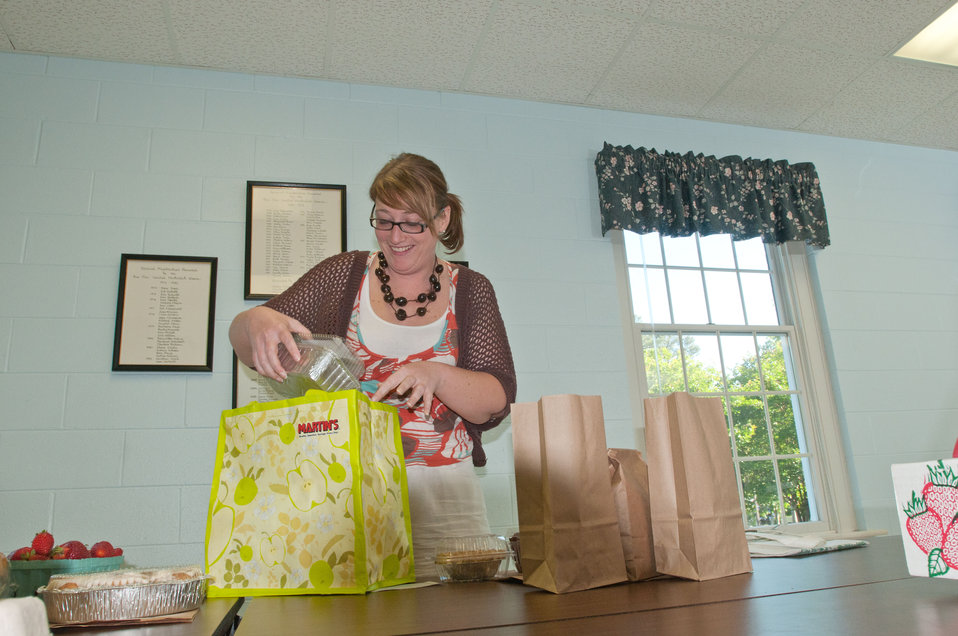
Susannah Bishop picks up her customized order of Fall Line Farms groceries at the Bon Air United Methodist Church pick-up point, in Richmond, VA, on Thursday, May 5, 2011. Traditional food cooperatives provide identical orders. This is one of several pick-up points in the Richmond area. This local food hub offers a wide variety of household food staples and specialty items. Members can pick their customized orders from an ever changing inventory of fruits, vegetables, meats, soaps, eggs, cheeses, flowers, honey, pastas, sauces, syrups, baked goods, mushrooms, flour and grains. Suppliers post what they have on a Lulus Local Food online listing and customers can make their selection. Then every Thursday suppliers team up with other suppliers to deliver orders to, one of several pick-up points, designated by the customer in or around the Richmond area.